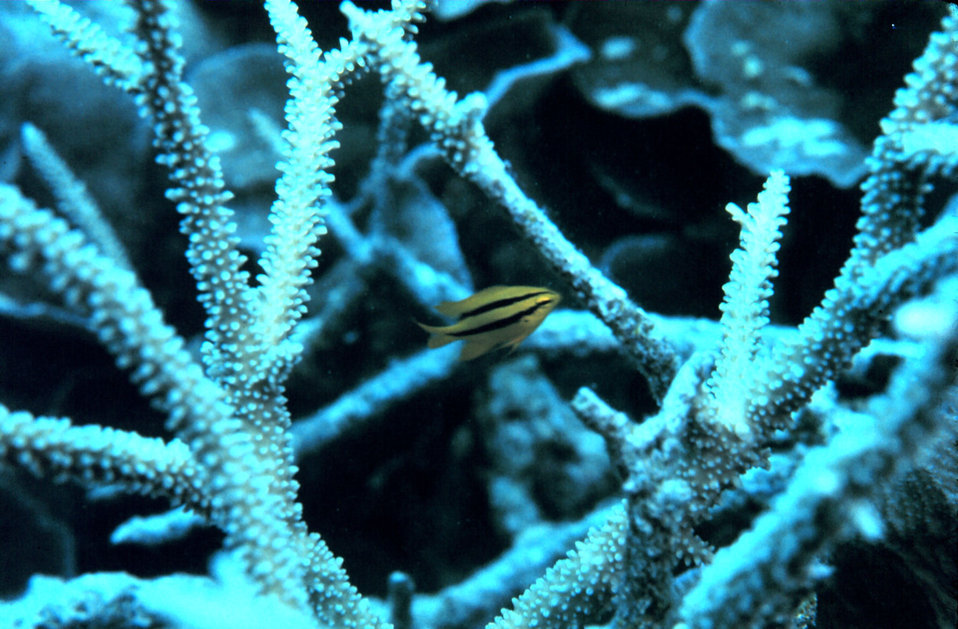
Juvenile Behn's damsel (Neoglyphidodon nigroris)